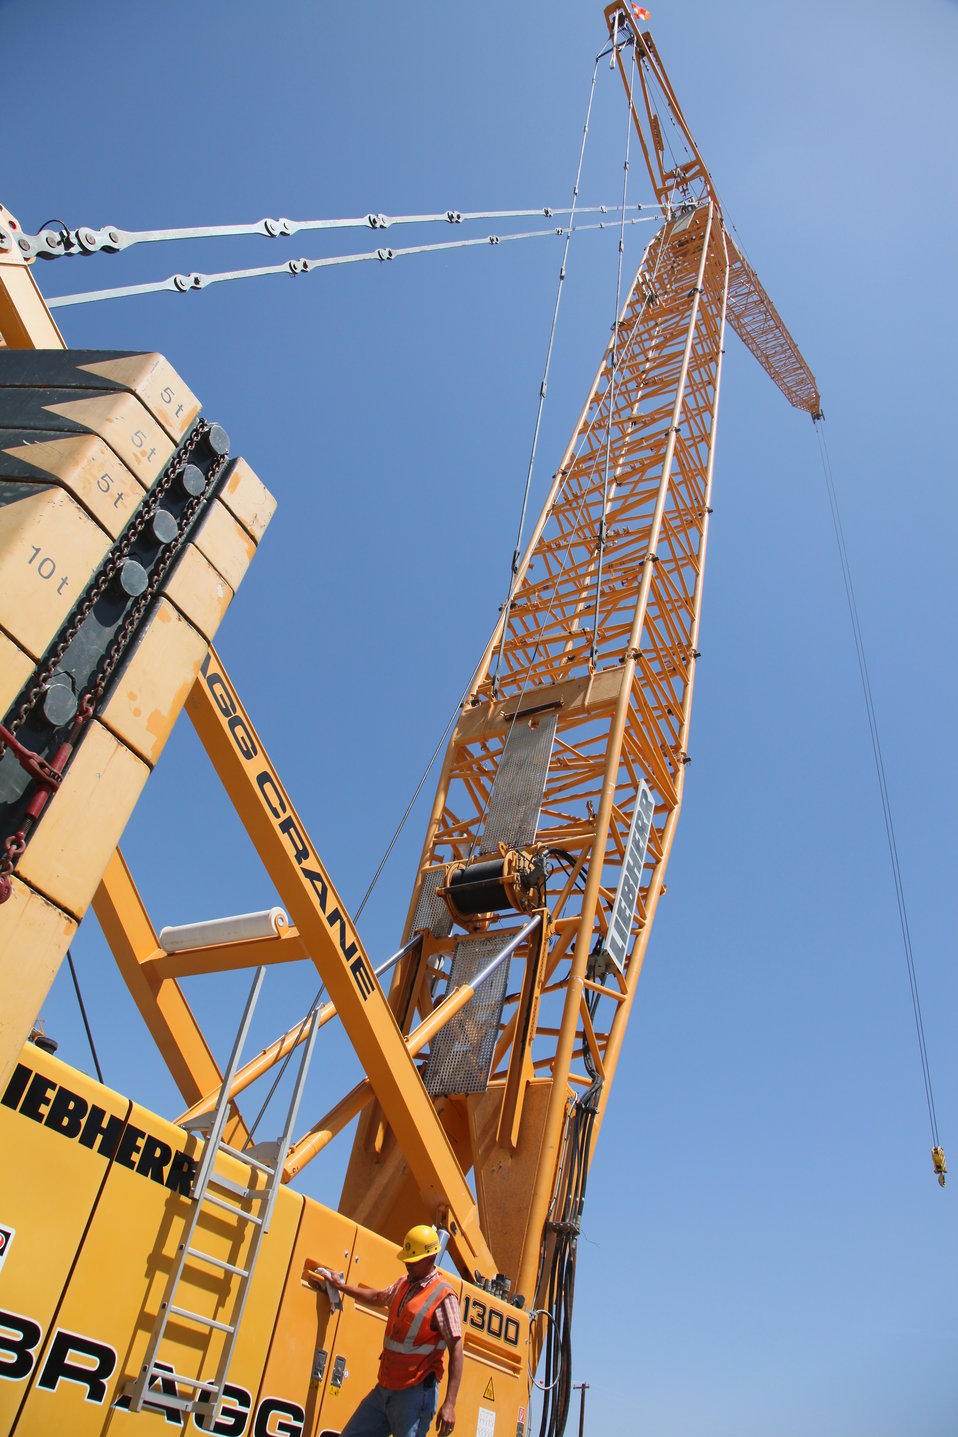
Cranes erected at the Folsom auxiliary spillway

This movable crane, shown May 10, 2012, was used to erect two of the three tower cranes at the construction site for the Folsom Dam auxiliary spillway in Folsom, Calif. The tower cranes will be used in lifting form work, rebar and concrete in constructing the spillway starting later in May. The Sacramento District has shifted its focus to construction of the spillway's control structure, which is essentially a second dam. The spillway is scheduled to be ready for use in 2017 and will allow Folsom Dam to release water sooner and more safely, helping reduce flood risk for the Sacramento region.